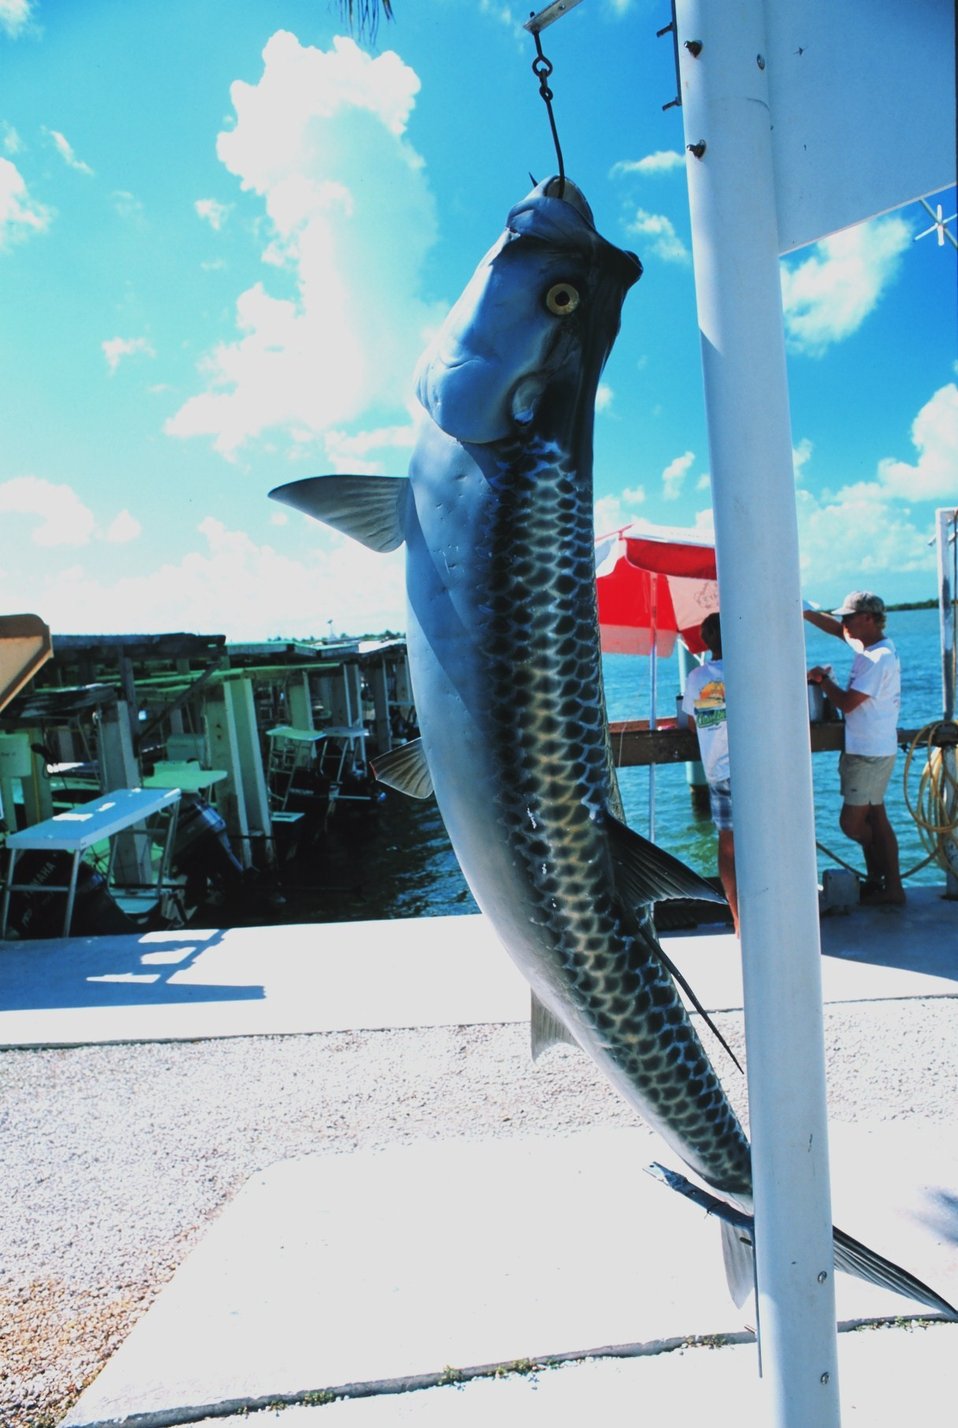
Fish art